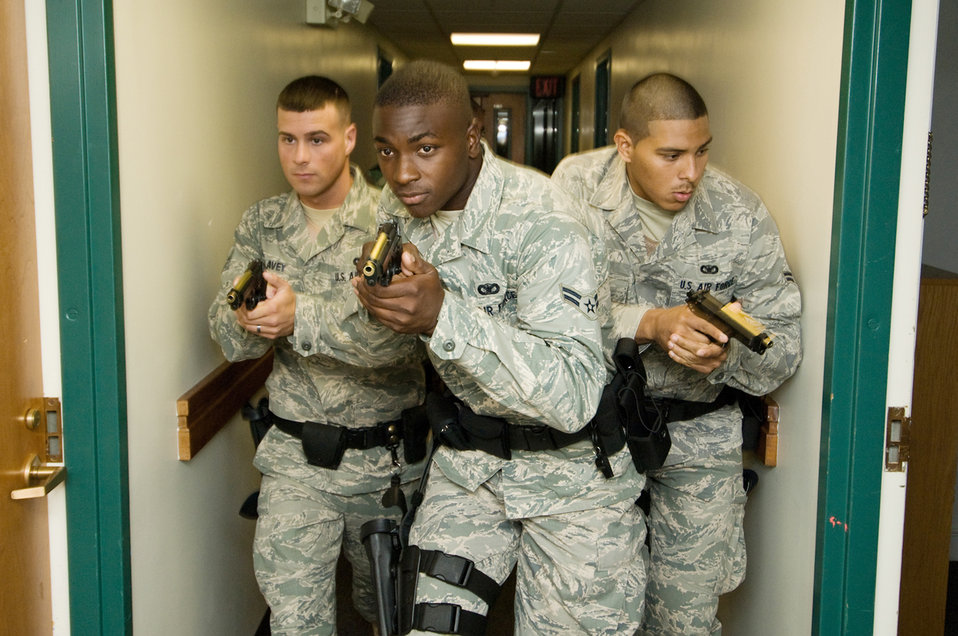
Hanscom Airmen train with Massachusetts state troopers

Airman 1st Class Jeffrey Lavey (from left to right), Airman 1st Class Nicholas Taylor and Airman 1st Class Abraham Medina move along the corridors of a base dormitory during a training session with the Massachusetts State Police Special Tactical Operations Team where they learned how to diffuse an active-shooter scenario Aug. 6 at Hanscom Air Force Base, Mass. The Airmen are assigned to the 66th Security Forces Squadron.